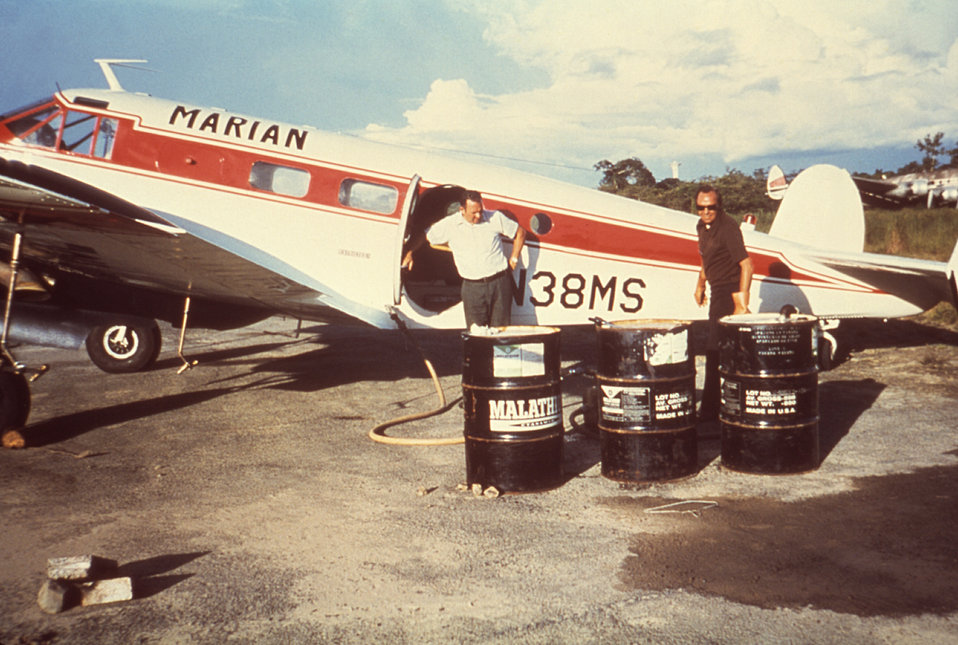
This 1981 photograph depicts a twin-engine Beechcraft used in the dispersal of ultra-low volume (ULV) insecticidal fog in order to control populations of potential insect disease vectors.